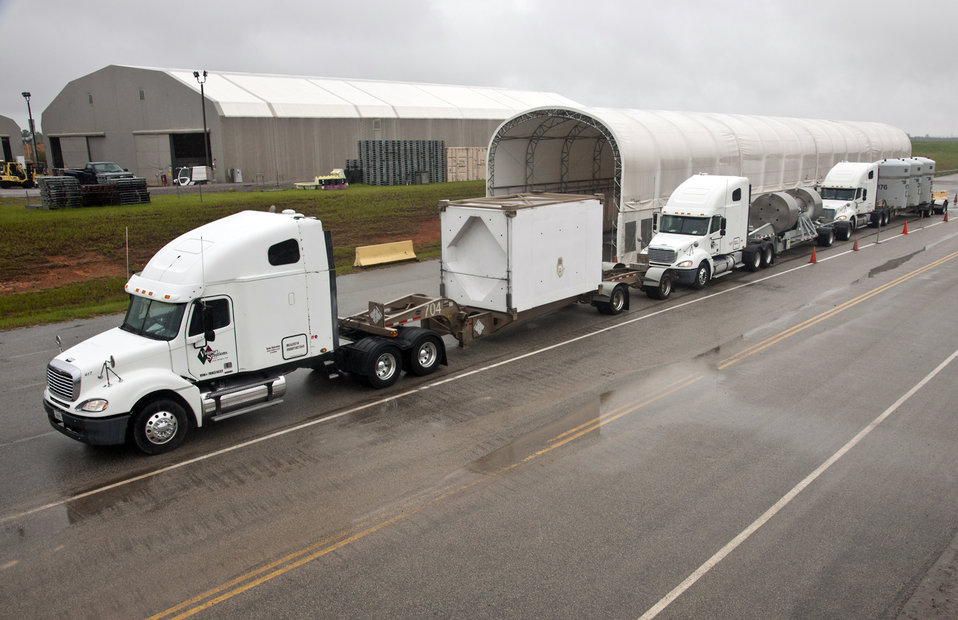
SRS Historic Achievement in Transporting Nuclear Waste to New Mexico

June 2012 - For the first time in the history of the DOE Complex, Savannah River Nuclear Solutions, LLC personnel at SRS made three TRU waste shipments on the same day, using three different shipping containers. The three trucks transporting TRU waste (from left) used TRUPACT-III, RH-72-B and TRUPACT-II containers.